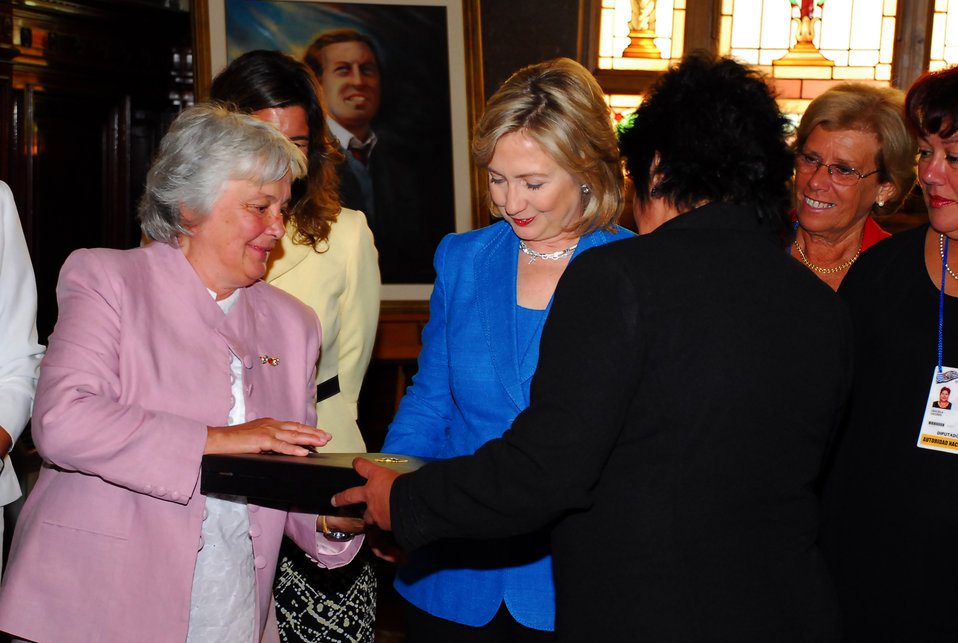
Secretary Clinton Meets With Uruguay Women Legislators

Future first Lady, Lucía Topolansky gives a present to U.S. Secretary of State Hillary Rodham Clinton after she met with Women Legislators in Montevideo, Uruguay March 1, 2010.